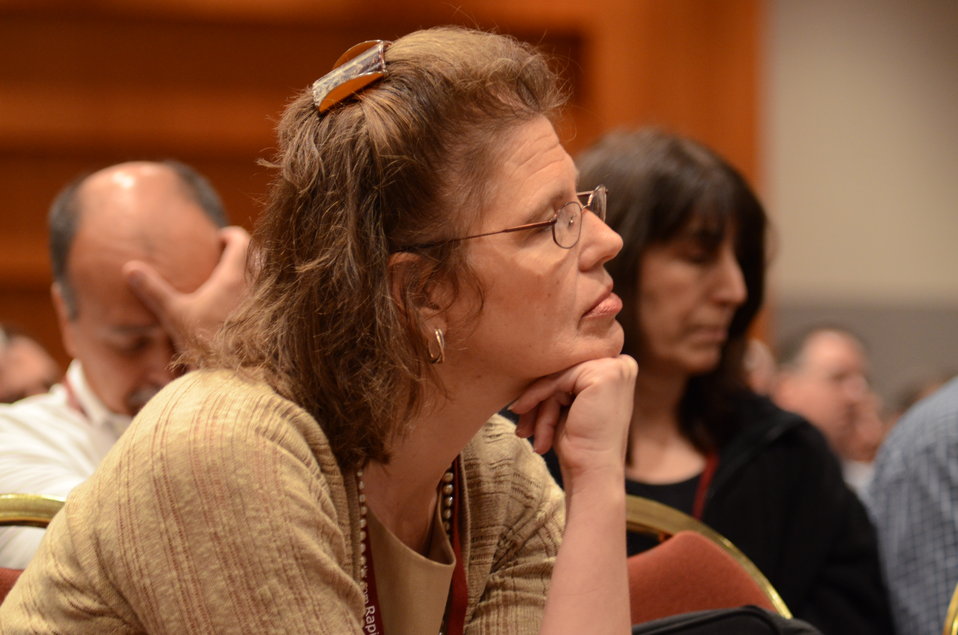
A member of the audience listens to Agriculture Secretary Tom Vilsack speaks at the International Association for Food Protection (IAPP) 100th annual meeting in Milwaukee, WI, on Wednesday, August 3, 2011. IAPP is committed to providing members worldwide with a forum to exchange information on protecting the global food supply.